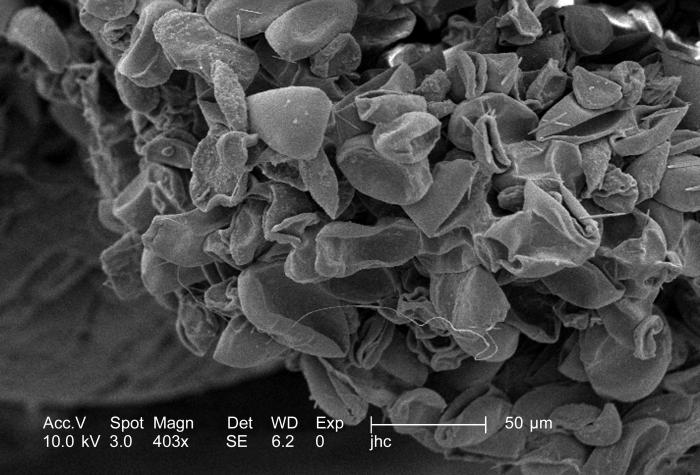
Under a moderately high magnification of 403x, this scanning electron micrograph (SEM) revealed some of the morphologic ultrastructure found on the petal of an unidentified specie of "spiderwort" flower, Tradescantia sp.. Note the myriad of textures comprising the petal's surface, a structure that is actually a modified leaf.